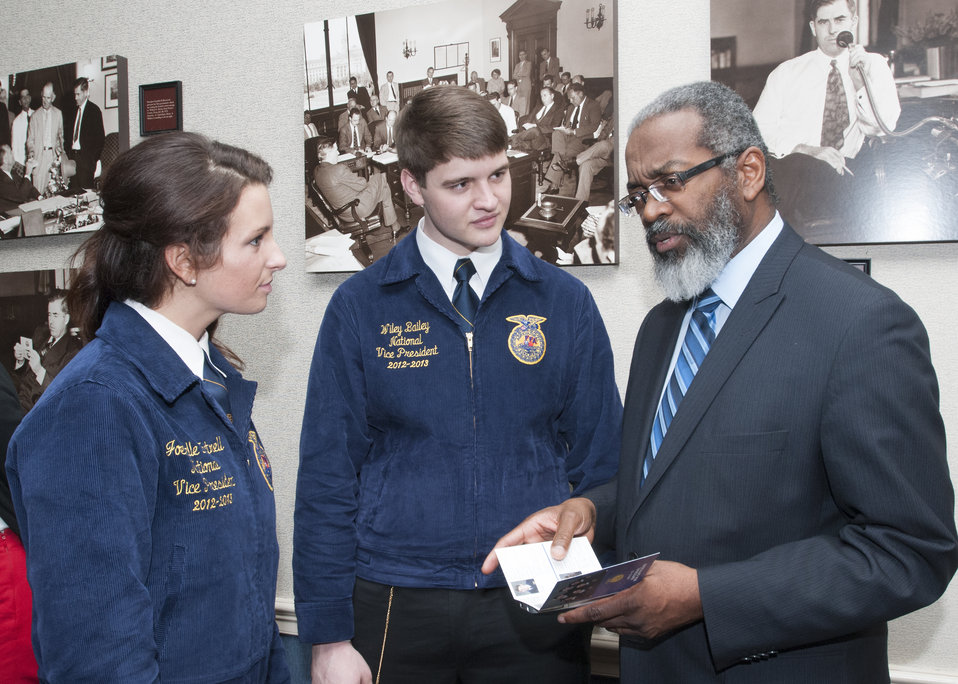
U.S. Department of Agriculture (USDA) Animal and Plant Health Inspection Service (APHIS) Administrator Dr. Gregory Parham speaks to FFA National Eastern Region Vice President Joenelle Futrell and FFA National Southern Region Vice President Wiley Bailey in the Wallace room at the USDA in Washington, D.C., on Wednesday, Jan. 16, 2013.